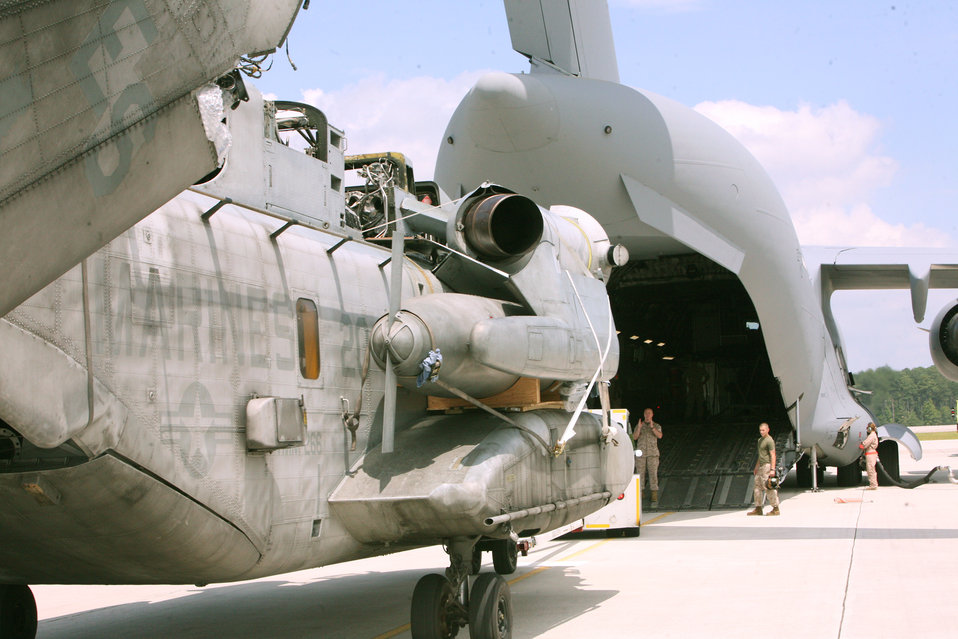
Pakistan relief efforts

A CH-53E Super Stallion helicopter with the 26th Marine Expeditionary Unit is loaded onto a C-17 Globemaster III Aug. 20, 2010, at Marine Corps Air Station Cherry Point, N.C. The C-17 from Joint Base Charleston, S.C., will carry the CH-53E, one of four for the 26th MEU, to Pakistan to aid in the MEU's relief operations in the flood-ravaged region.